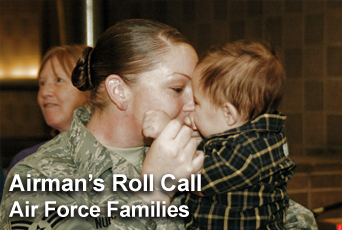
Airman's Roll Call: Air Force families

This week's Airman's Roll Call focuses on the differences between diversity and equal opportunity.